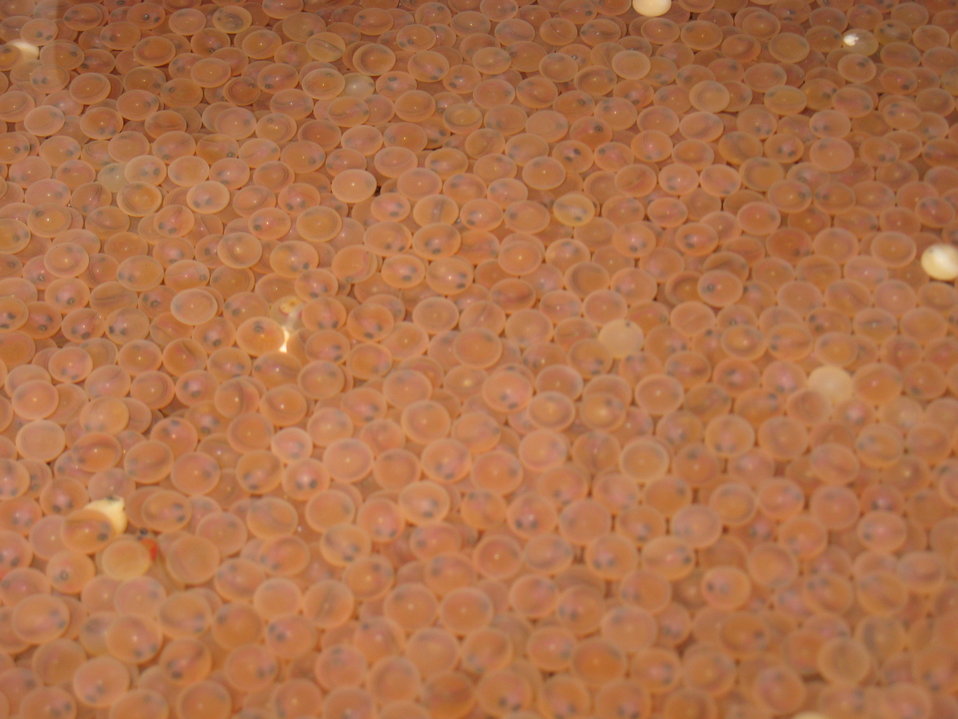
Lake trout eyed-eggs